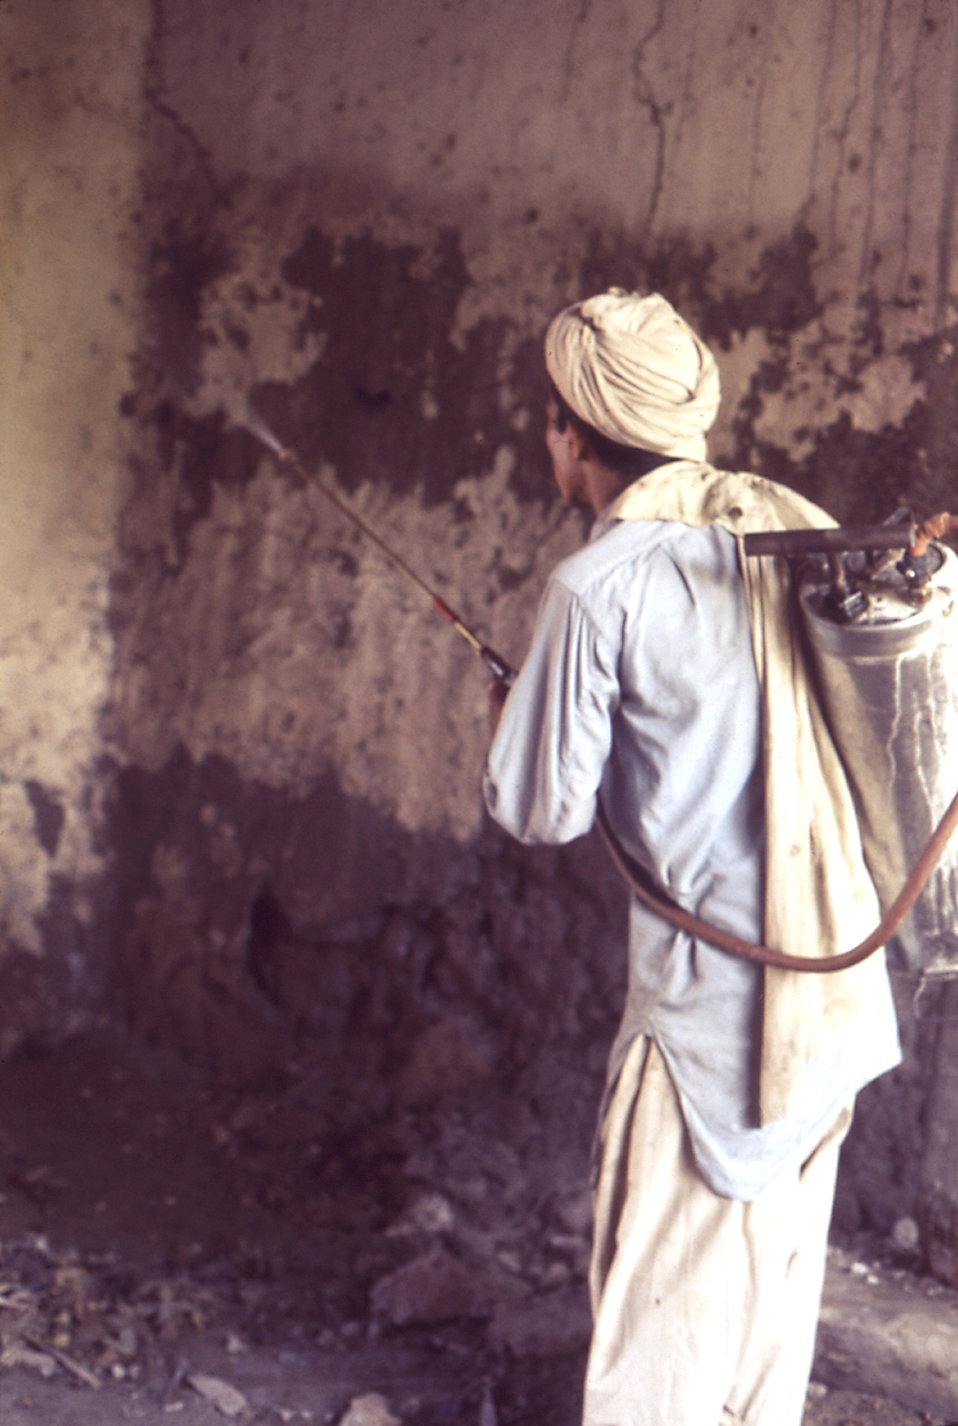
This Pakistani malaria control worker is demonstrating malathion spraying technique during a 1976 poison control study.